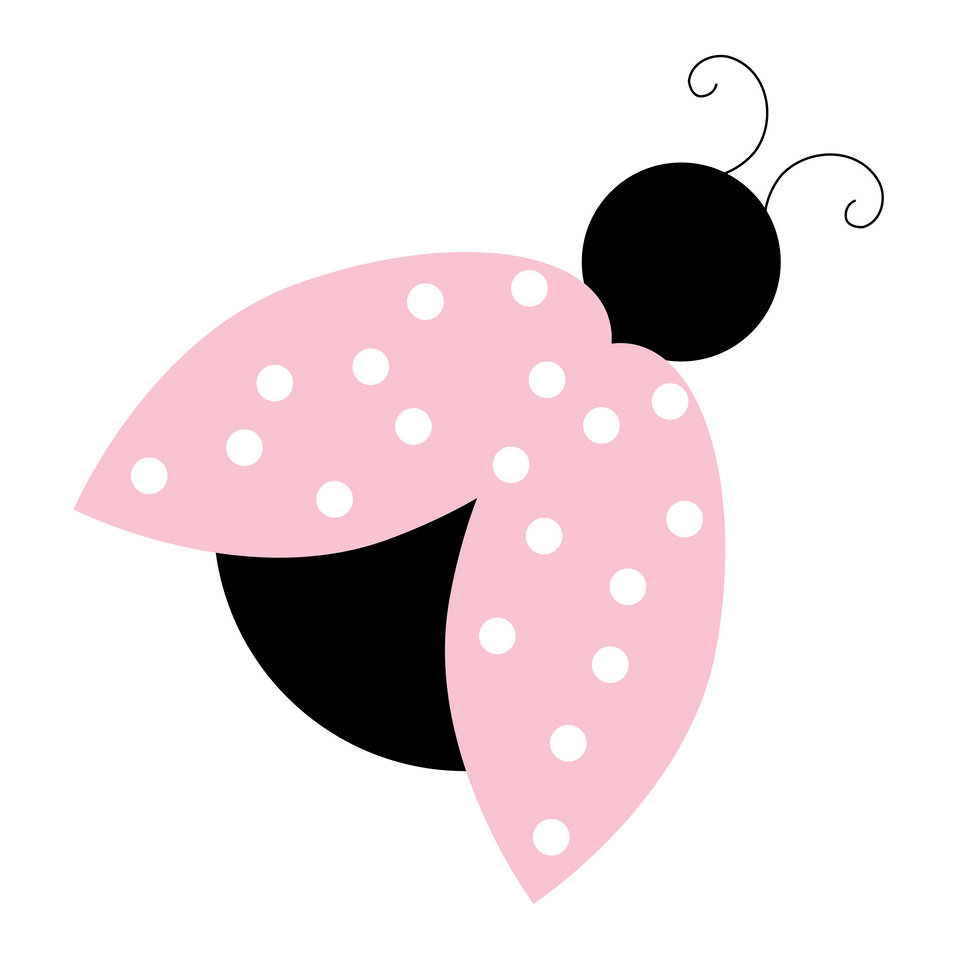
Ladybug pink clipart

Cute pink and white spots ladybug clipart for scrapbooking.